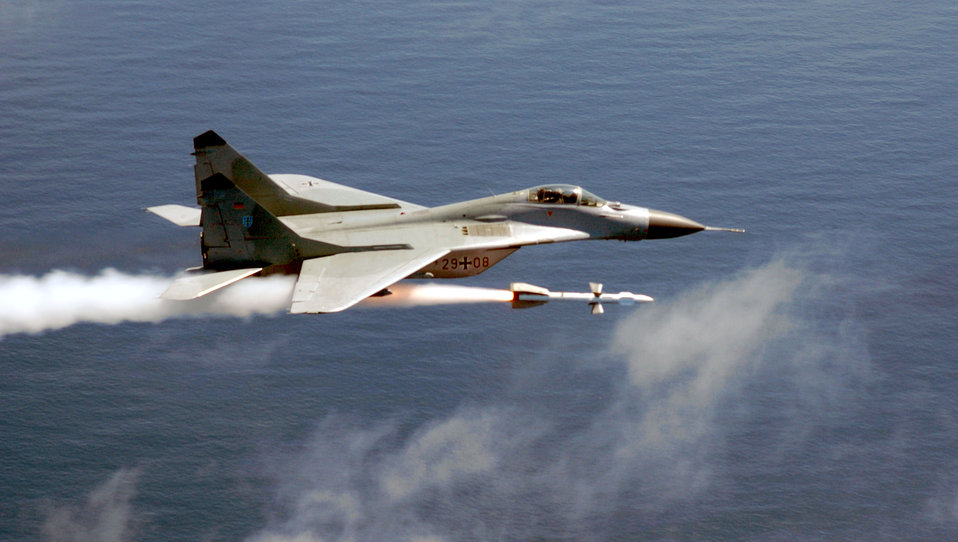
Fire away

EGLIN AIR FORCE BASE, Fla. -- This Soviet-built MiG-29 Fulcrum flown by Maj. Peter Meisberger from Germany's Fighter Wing 73